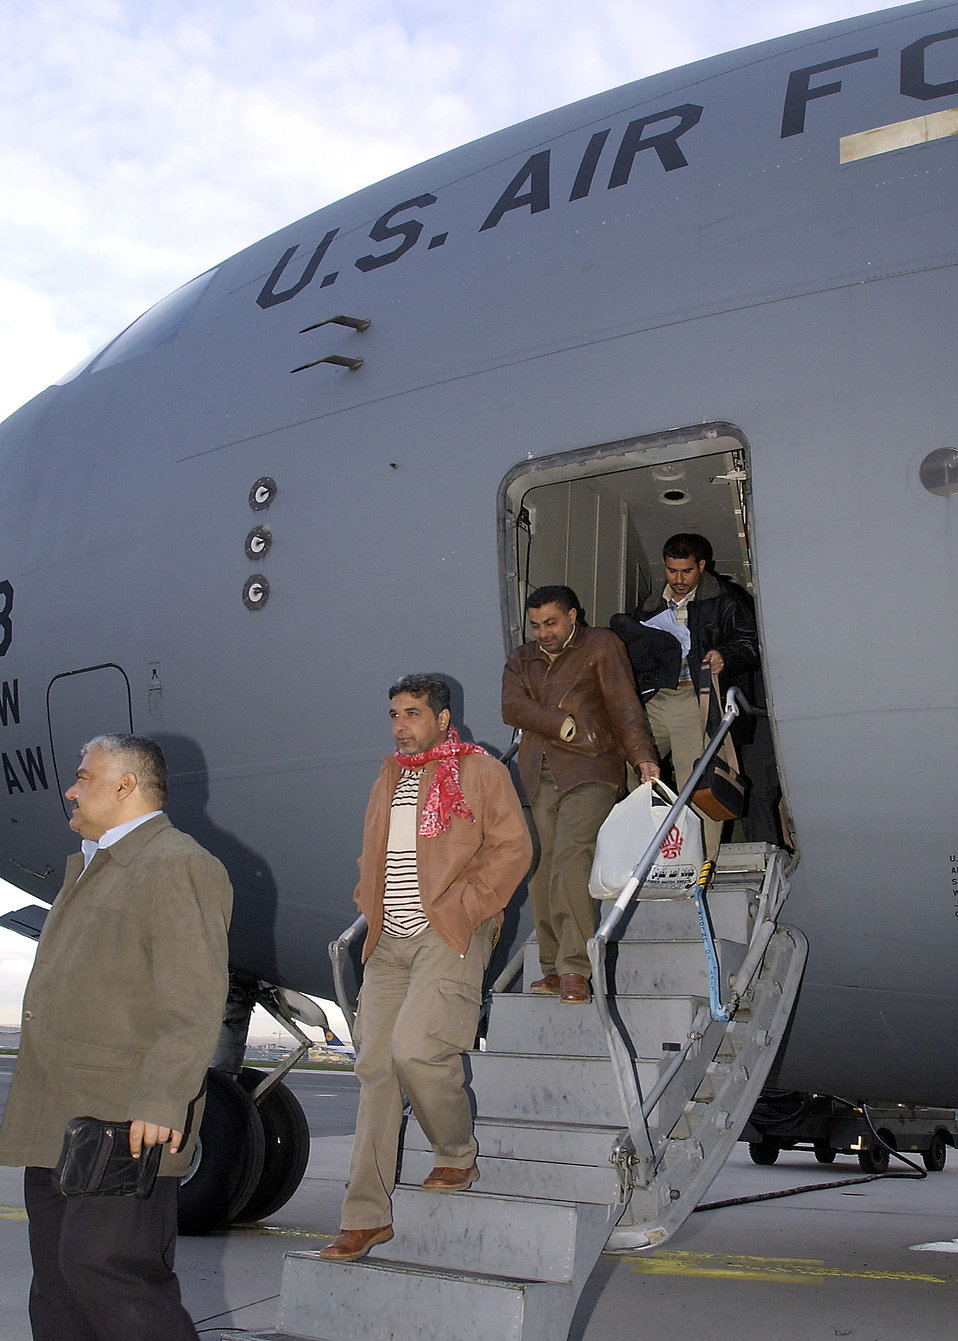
A trip to the states

RHEIN-MAIN AIR BASE, Germany -- Iraqis arrive here April 5 on their way to the United States for medical attention in Houston. The men had their right hands cut off by former Iraqi President Saddam Hussein for the alleged crime of dealing in foreign currency.